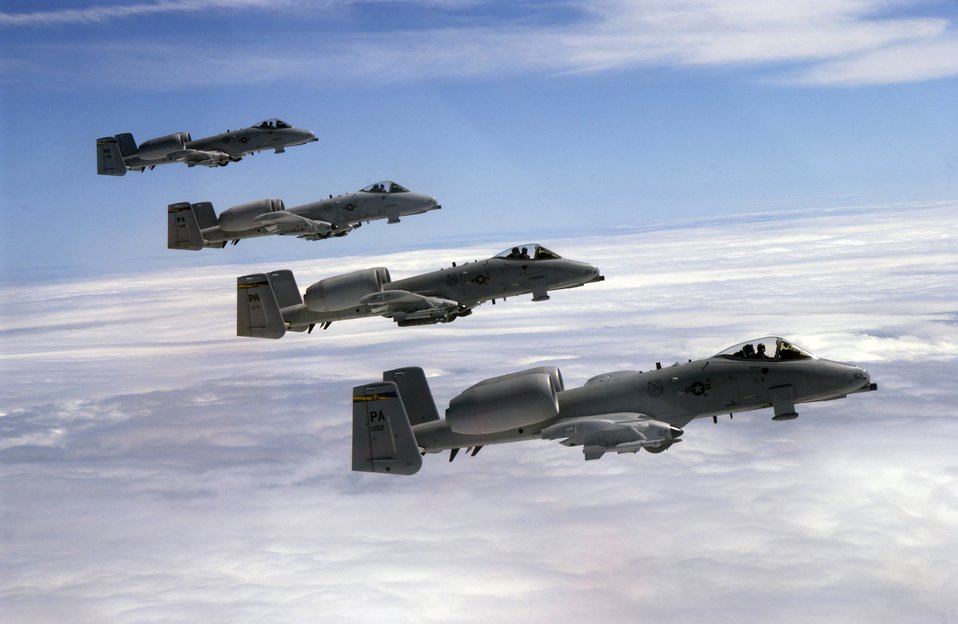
Four bolts

OVER NEW JERSEY -- Four A-10 Thunderbolt IIs fly in formation during a refueling mission here recently. The A-10s are assigned to the 111th Fighter Wing at Willow Grove Air Reserve Station, Pa.